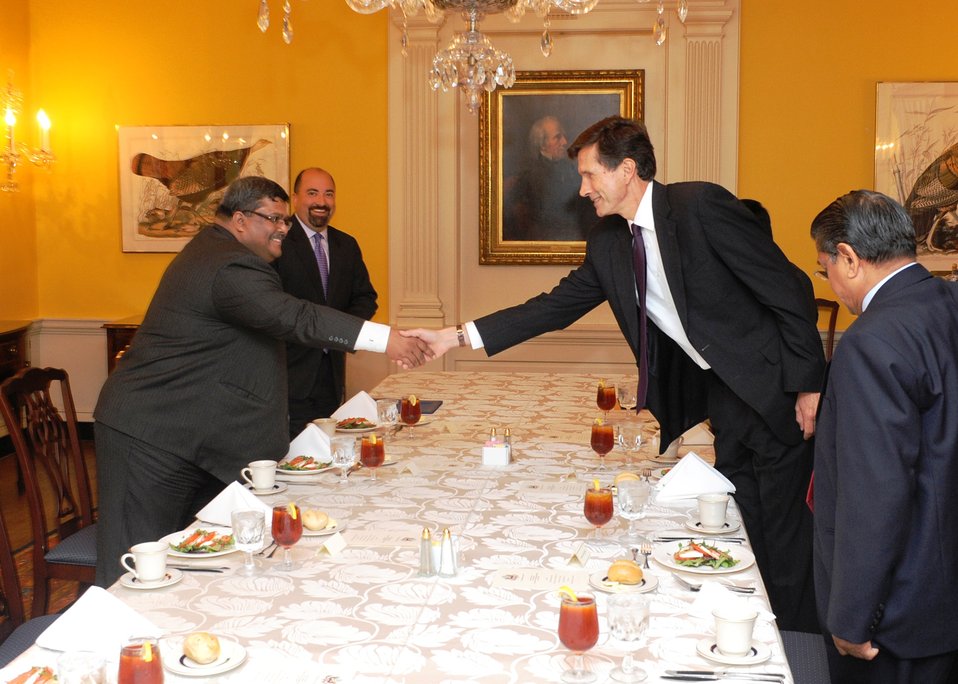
Assistant Secretary Blake Shakes Hands With Bangladeshi Foreign Secretary Mijarul Quayes

U.S. Assistant Secretary of State for South and Central Asian Affairs Robert O. Blake shakes hands with Bangladeshi Foreign Secretary Mijarul Quayes during a working lunch at the U.S. Department of State in Washington, D.C., on June 29, 2010.